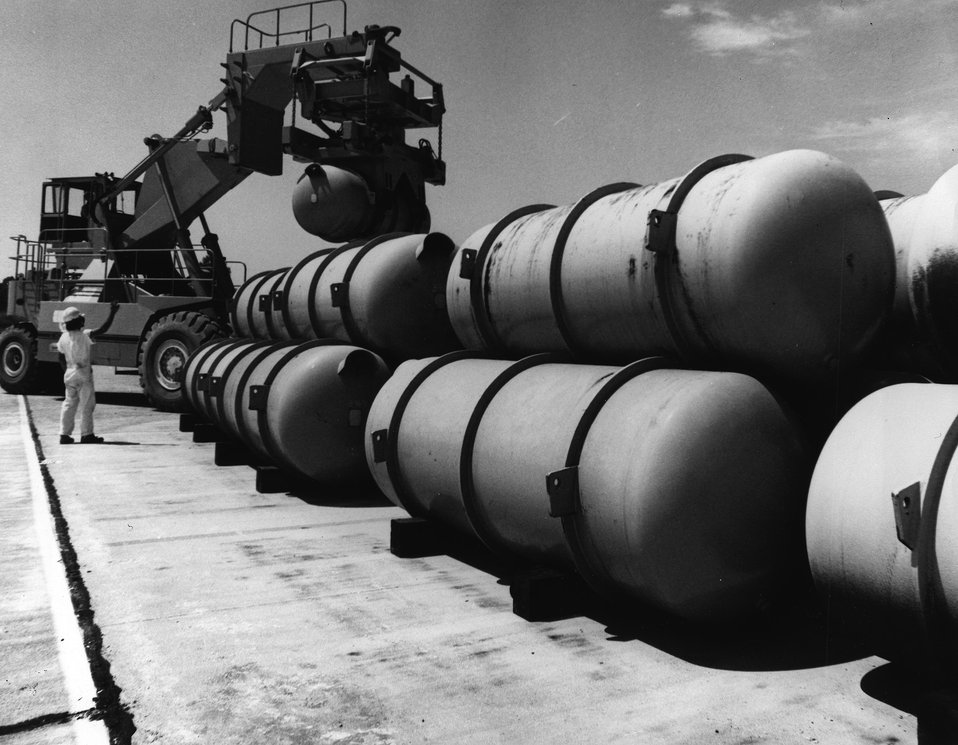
Uranium enrichment through gaseous diffusion. The large tanks weigh 10 tons and contain feed material, uranium hexaflouride, for the enrichment process carried out in the ERDA's gaseous diffusion plant at Oak Ridge, Tennessee; Pudacah, Kentucky and Portsmouth, Ohio. c. 1977